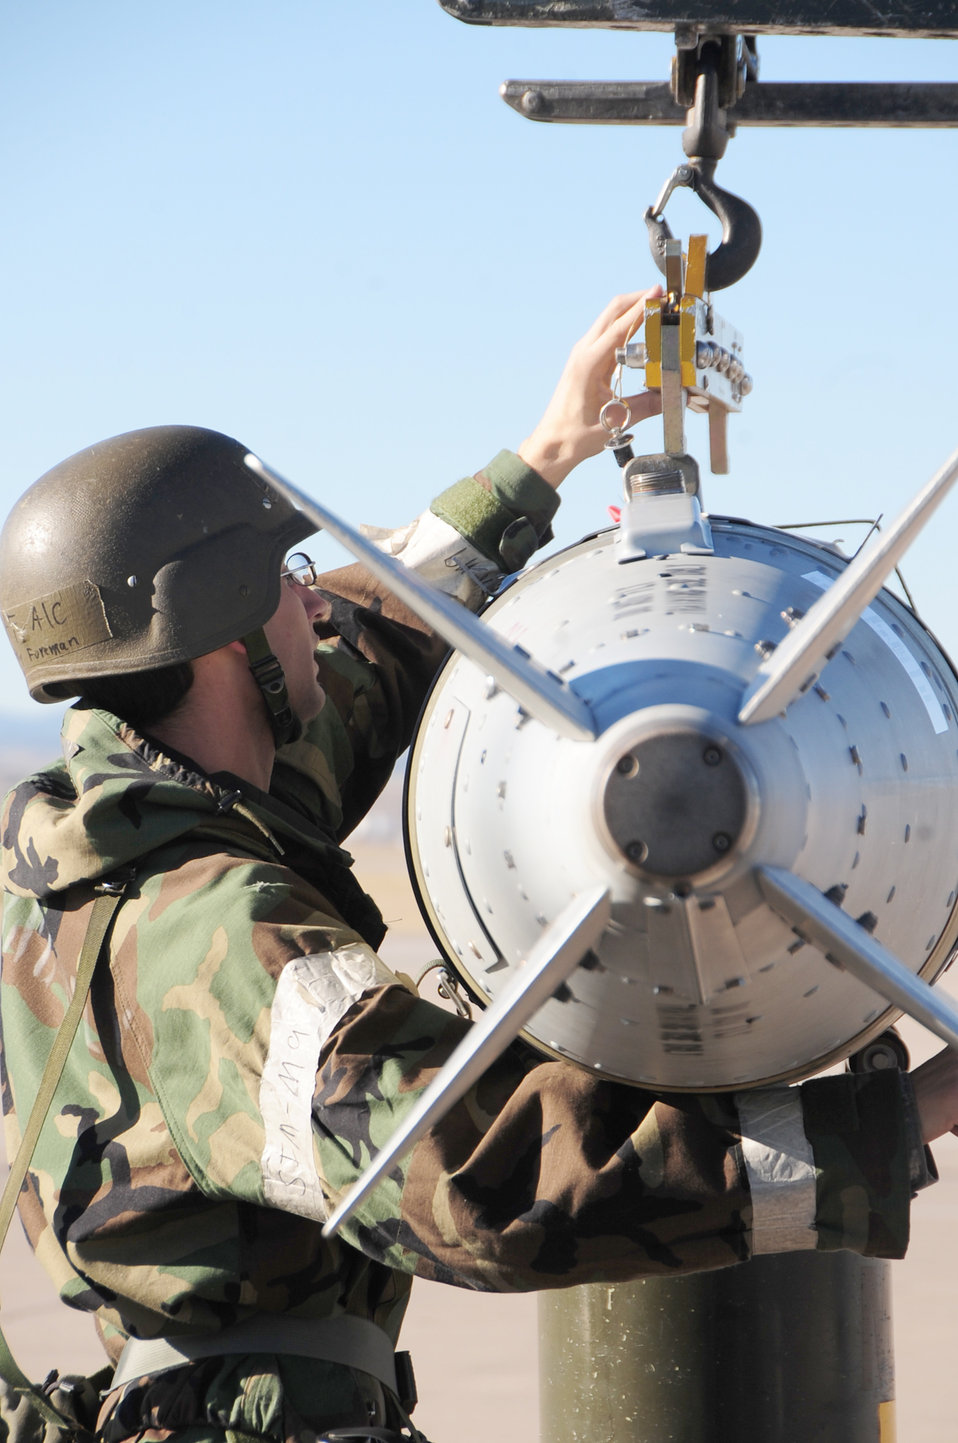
Phase II Operational Readiness Inspection

Airman 1st Class Timothy Foreman attaches a guided bomb unit-31 onto a bomb lift during a Phase II Operational Readiness Inspection Oct. 15, 2010, at Ellsworth Air Force Base, S.D. Airman Foreman is a munitions load crew member of the 28th Munitions Squadron.